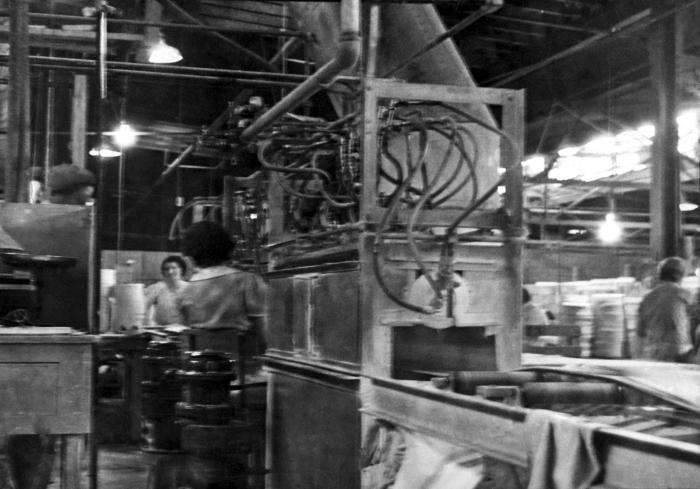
Provided by the Center for Disease Control's (CDC), National Institute for Occupational Safety and Health (NIOSH), this historic image depicted two female industrial workers who were inside a West Virginia ceramics factory, who were operating a glaze-spraying machine. This machine would apply a coating of glaze to the newly made, raw bisque forms, which would then be secondarily fired, imparting a shiny surface to the ceramics. Working within a clay-processing environment, workers should have taken precautions against the possibility of inhaling airborne particulates, which would lead to the chronic pulmonary disease known as pneumoconiosis, or silicosis, or more commonly known as 'grinders' disease', characterized by the formation of nodular fibrotic changes in the lungs. Note that these women were not wearing a filtered breathing mask, thereby, increasing their chances of contracting silicosis. The image was published in the 'Public Health Bulletin', No. 244, 1939.